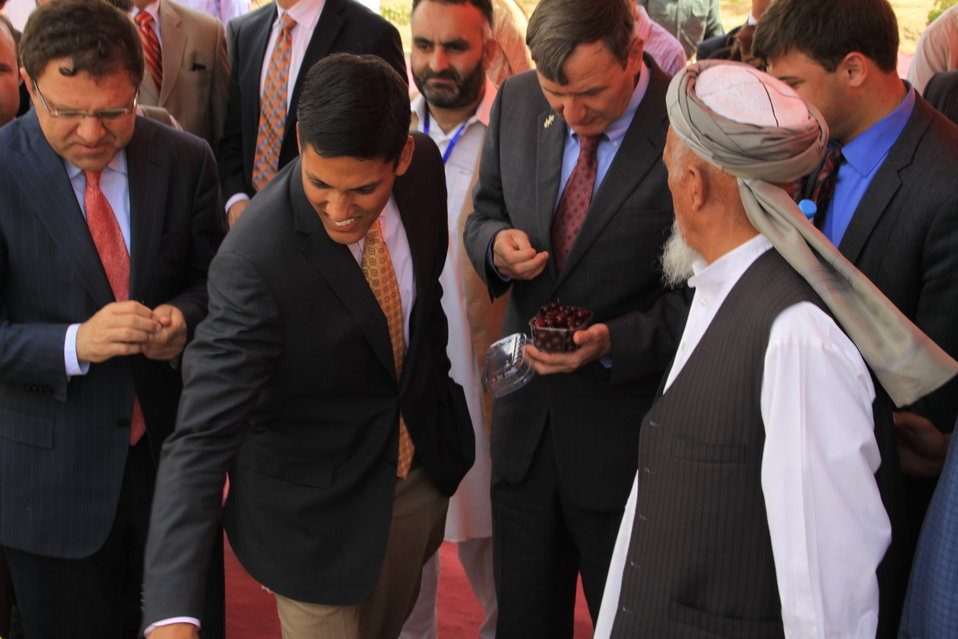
Badam Bagh Farm